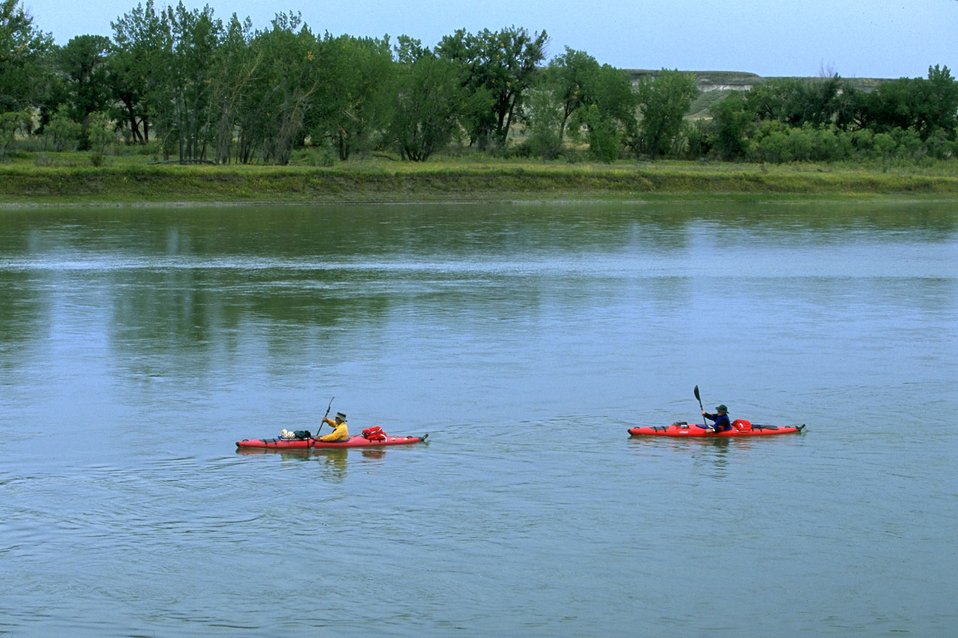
Floaters on Missouri River